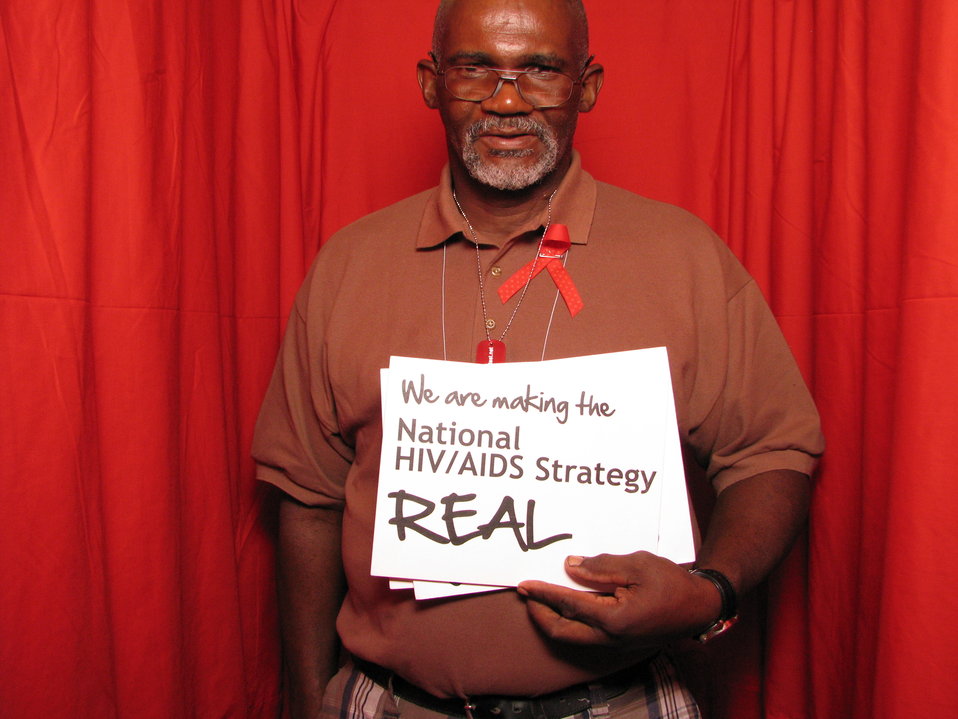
We are making the National HIV/AIDS Strategy REAL

From the AIDS.gov photo booth at the U.S. Conference on AIDS, September 2010 (Orlando, FL).